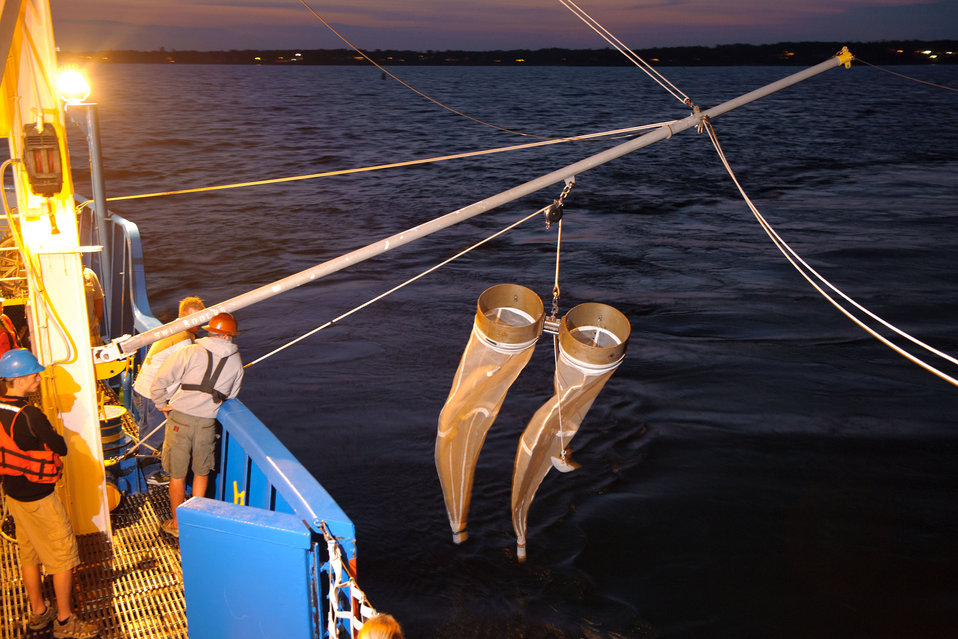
August 5, 2011 Friday night plankton tow!

Letting down the bongo nets, we did a tow for 10 minutes to collect small organisms, looking for offshore larval fish.